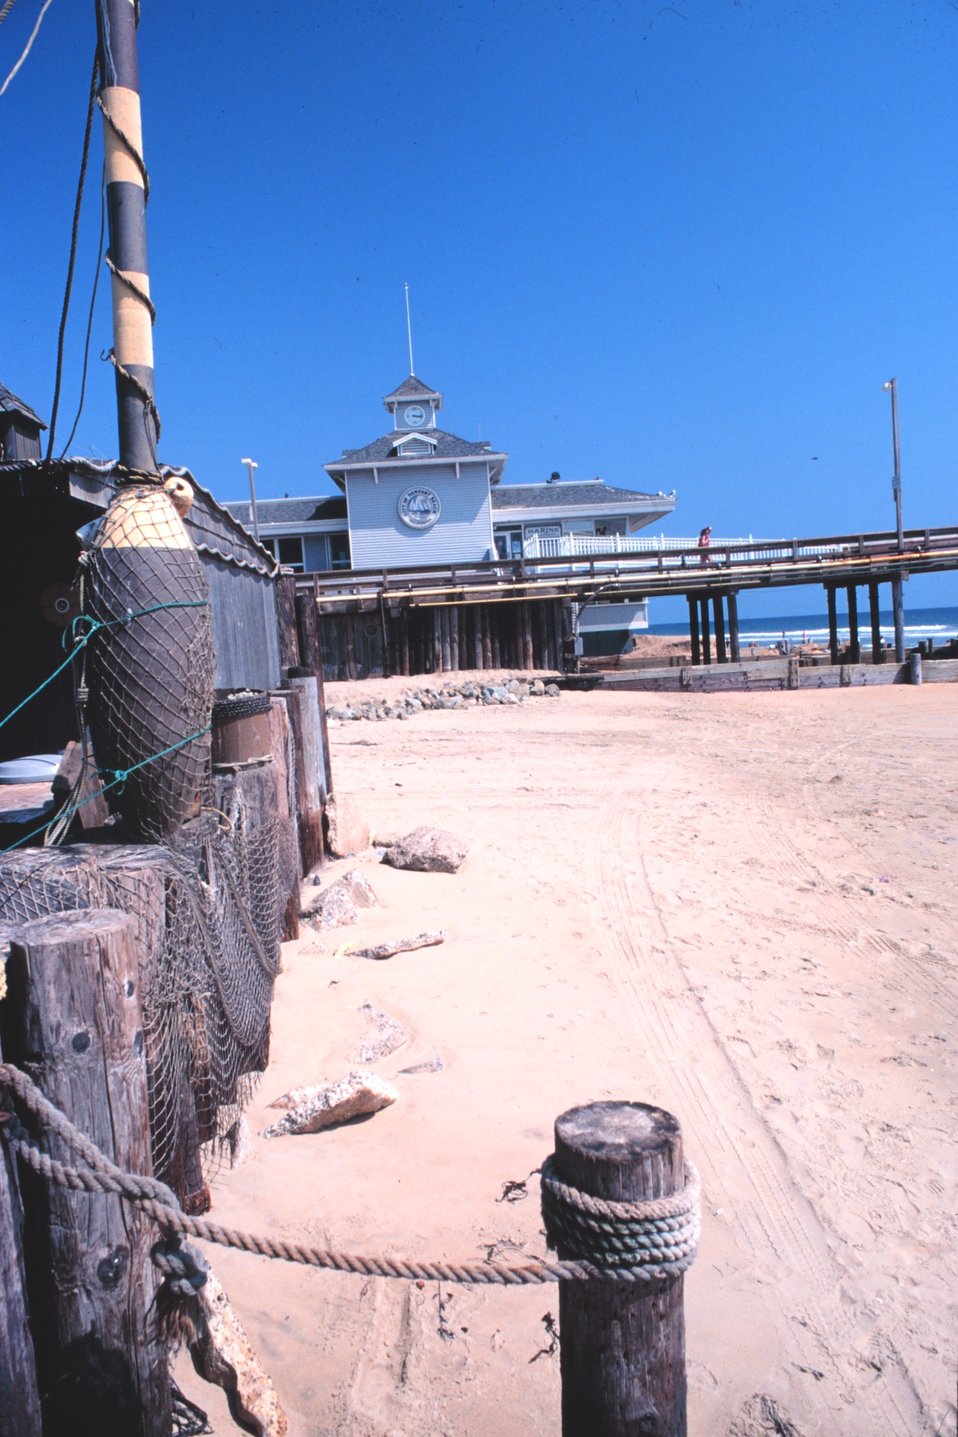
Views of the Dory Fleet Market